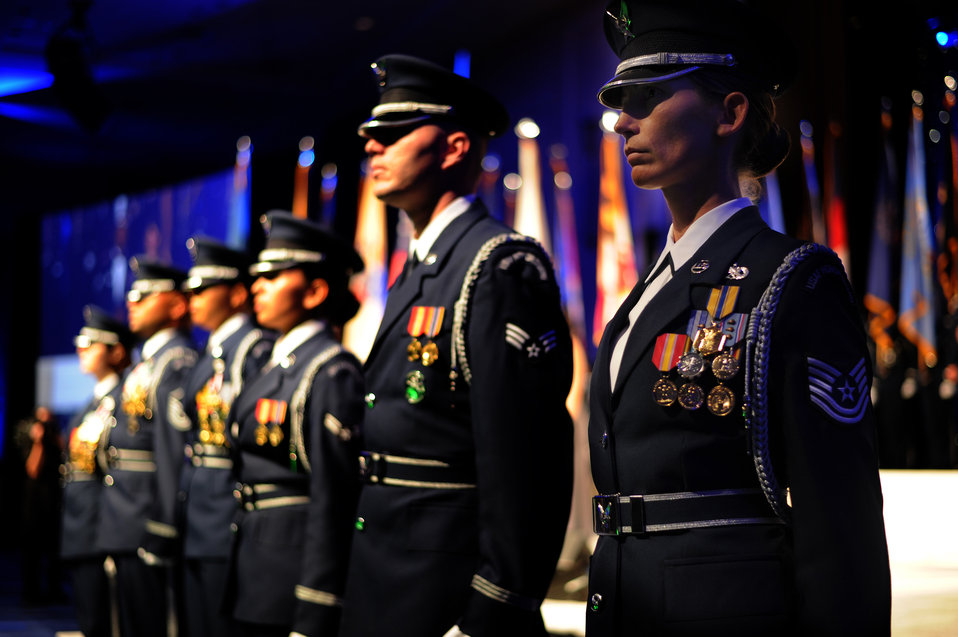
12 Outstanding Airmen of the Year

The U.S. Air Force Honor Guard provides escort support of the 12 Outstanding Airmen of the Year during the 2012 Air Force Association’s Air and Space Conference and Technology Exposition in Washington, D.C., Sept. 17, 2012. The recipients were recognized for superior leadership, job performance, community involvement and personal achievements.